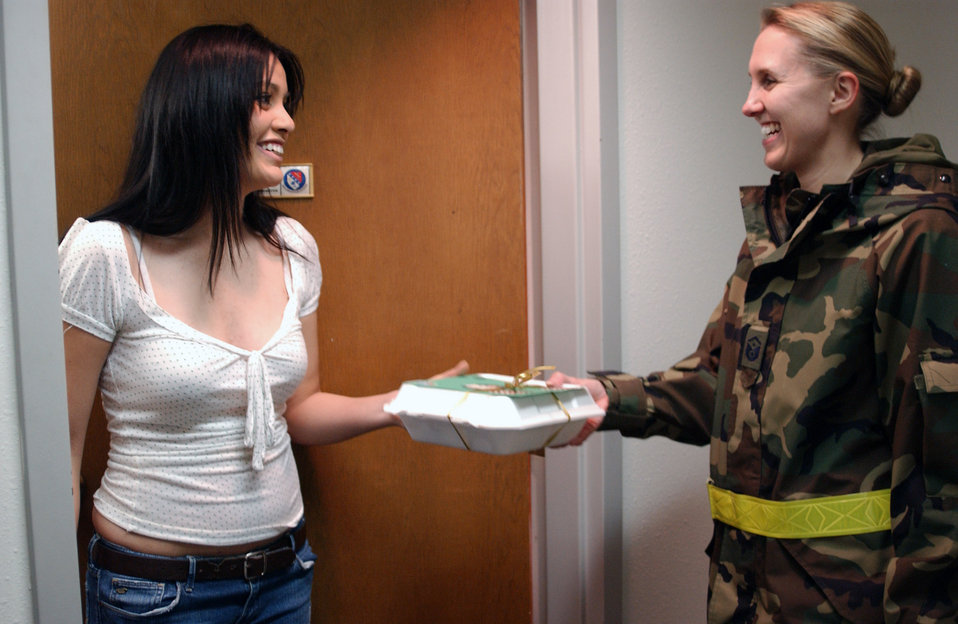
Cookie drive delivers holiday warmth during Alaskan winter

Airman 1st Class Claudia Arce receives cookies packaged for Operation Cookie Crunch from Master Sgt. Michelle Vanderbunt Dec. 14 in the 354th Communication Squadron and 354th Fighter Wing Staff Agency dormitory. The squadron first sergeants disperse the homemade cookies to single Airmen living in the dormitories as a holiday gesture. Airman Arce is a 354th Force Support Squadron personnelist and Sergeant Vanderbunt is the 354th FSS first sergeant.